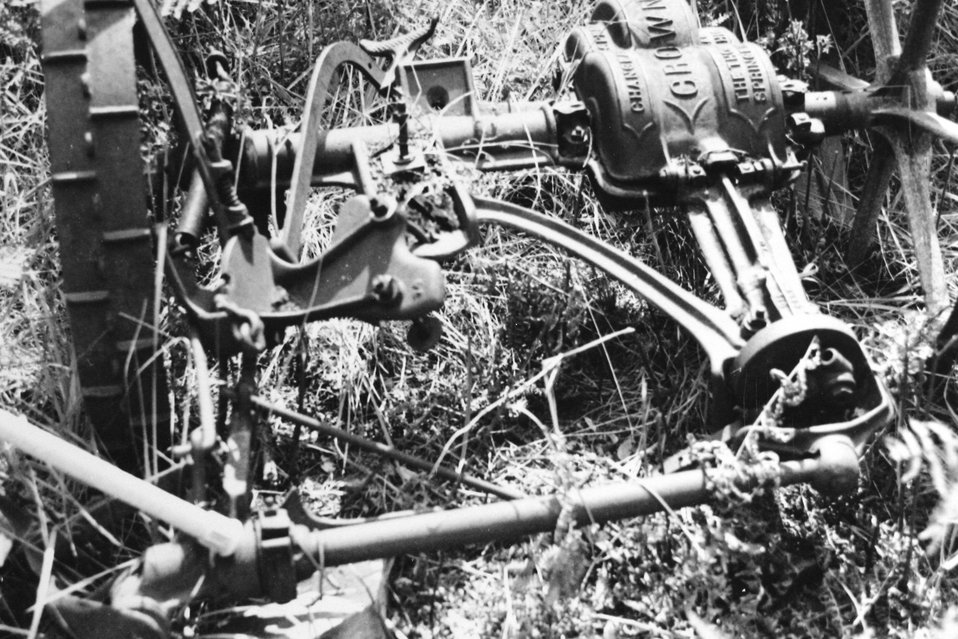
Farm equipment at Mule Creek.